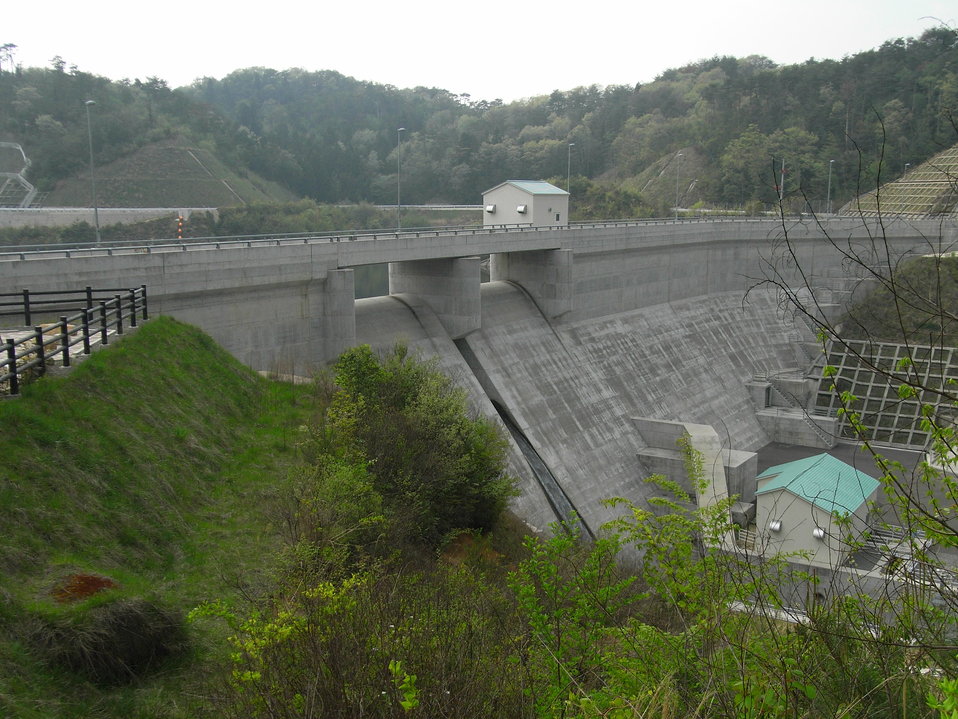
Dam